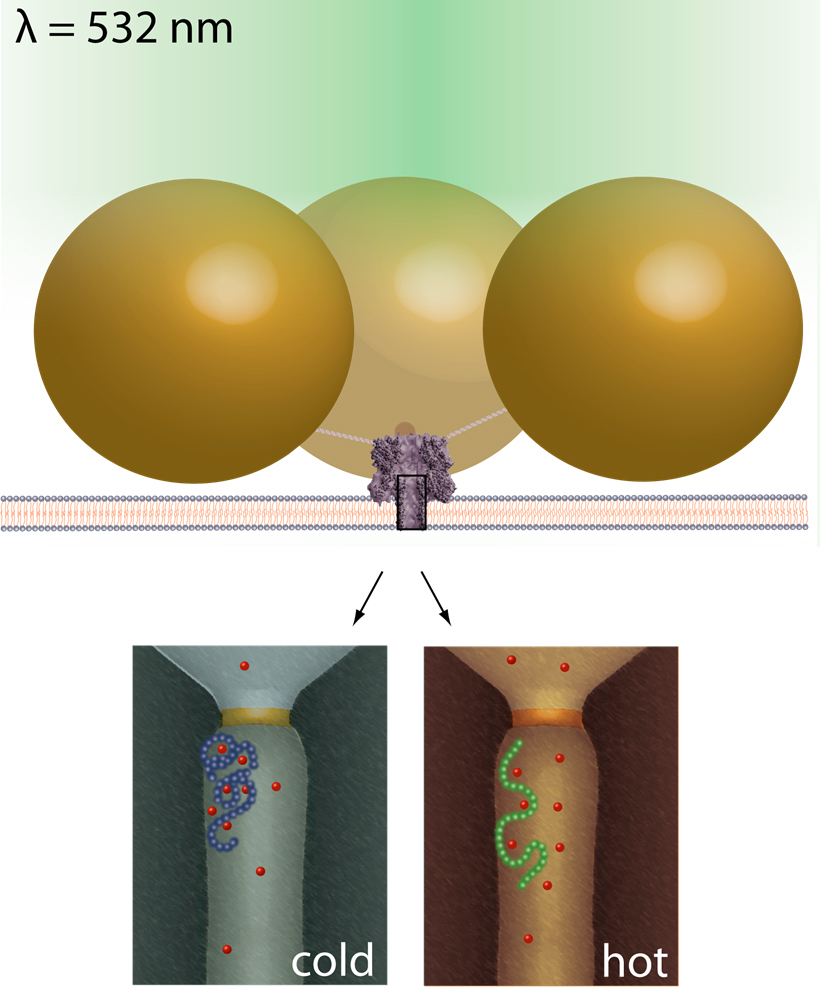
Nanoparticles

By tethering gold nanoparticles (large spheres in top image) to the nanopore (violet), the temperature around the nanopore can be changed quickly and precisely with laser light, allowing scientists to distinguish between similar molecules in the pore that behave differently under varied temperature conditions.